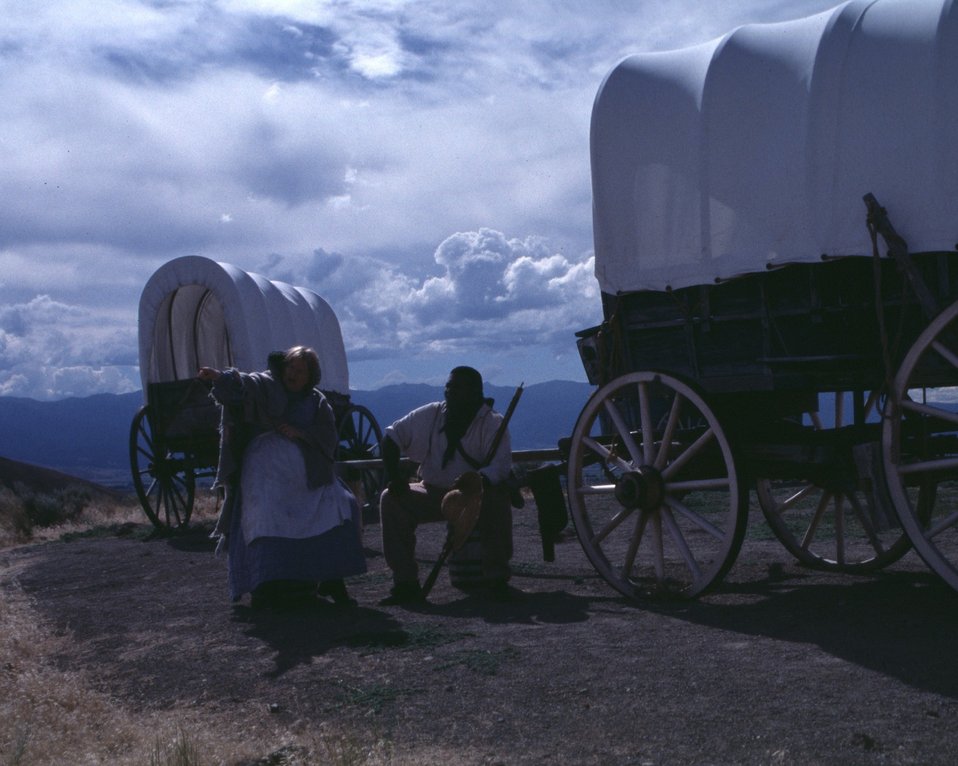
Nancy Harms and Dylan Prichertt portray pioneer woman and a black pioneer at an Oregon Trail wagon encampment.